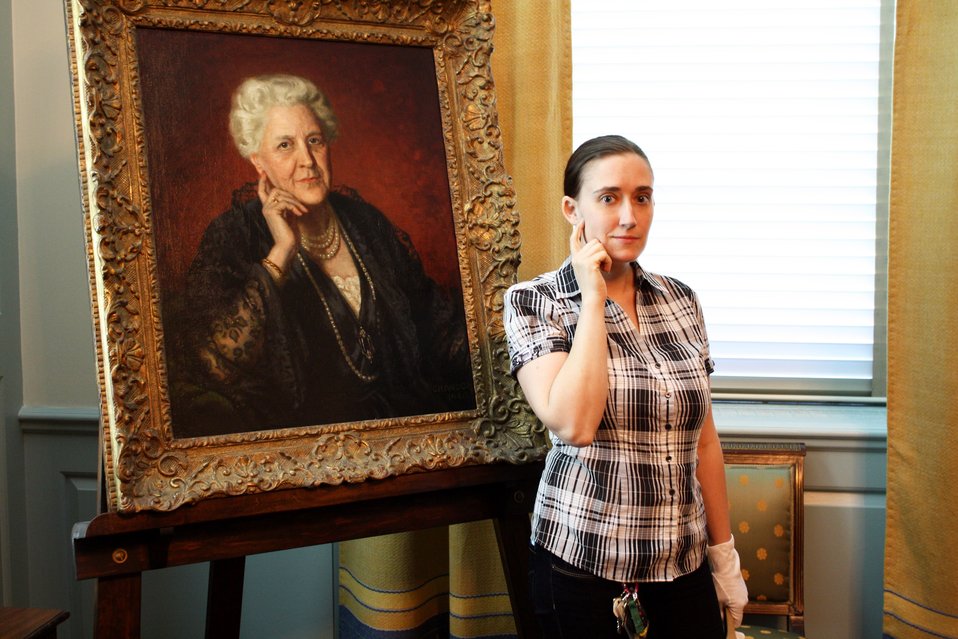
LP-FDR Museum Technician Katherine Sardino strikes her best Sara Delano Roosevelt pose while dusting FDR's study.; Location: Franklin D. Roosevelt Presidential Library, Hyde Park, New York